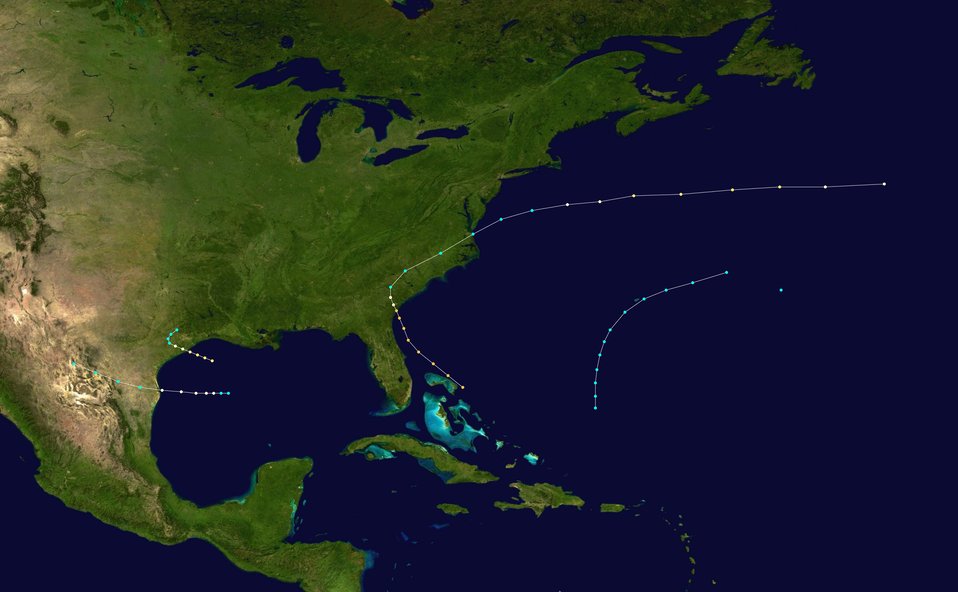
1854 Atlantic hurricane season summary